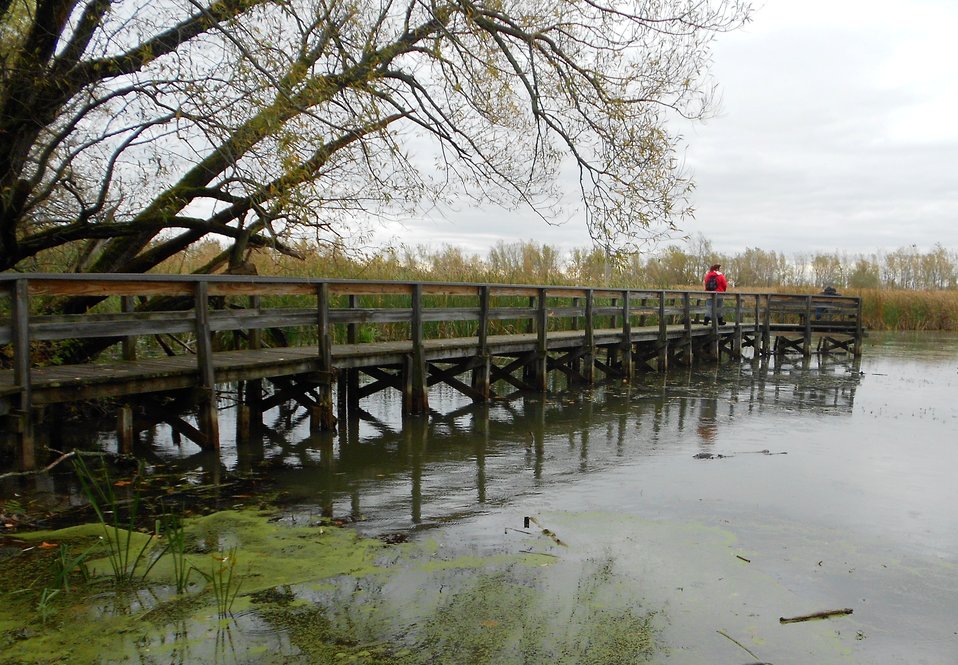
Observation dock at Tifft Nature Preserve

The wildlife observation dock at Tifft Nature Preserve. This is a great place to observe waterfowl and aquatic plants